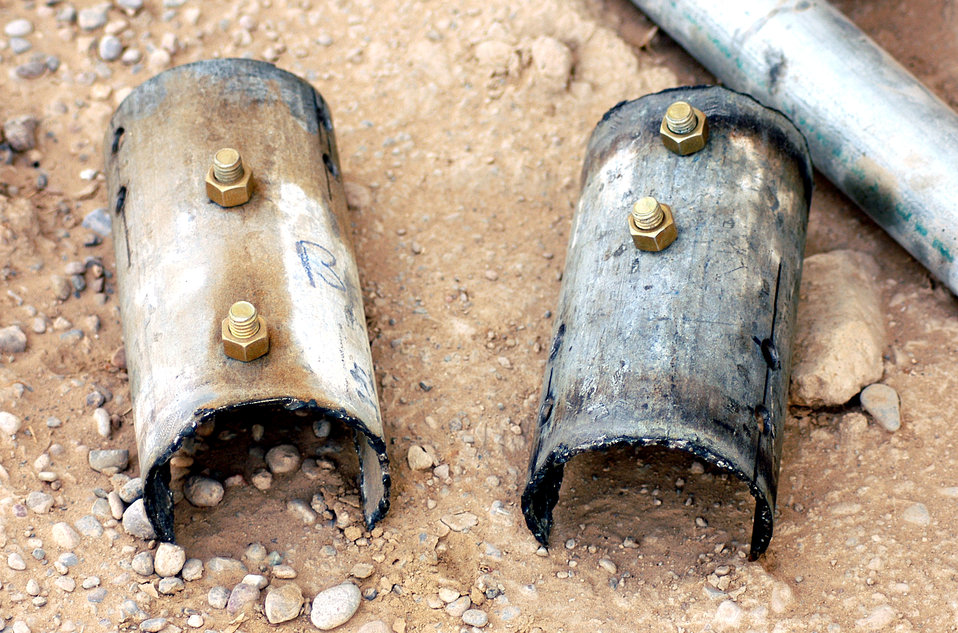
Engineers work together to solve problems at Kandahar

Two of the pieces of mounting hardware lie on the ground, ready to attach radio antennas to mounting poles at a new air traffic control facility at Kandahar Air Field, Afghanistan. The parts were fabricated by Master Sgt. Frank Swygert from the 451st Expeditionary Civil Engineer Flight from a pipe found by the side of the road.